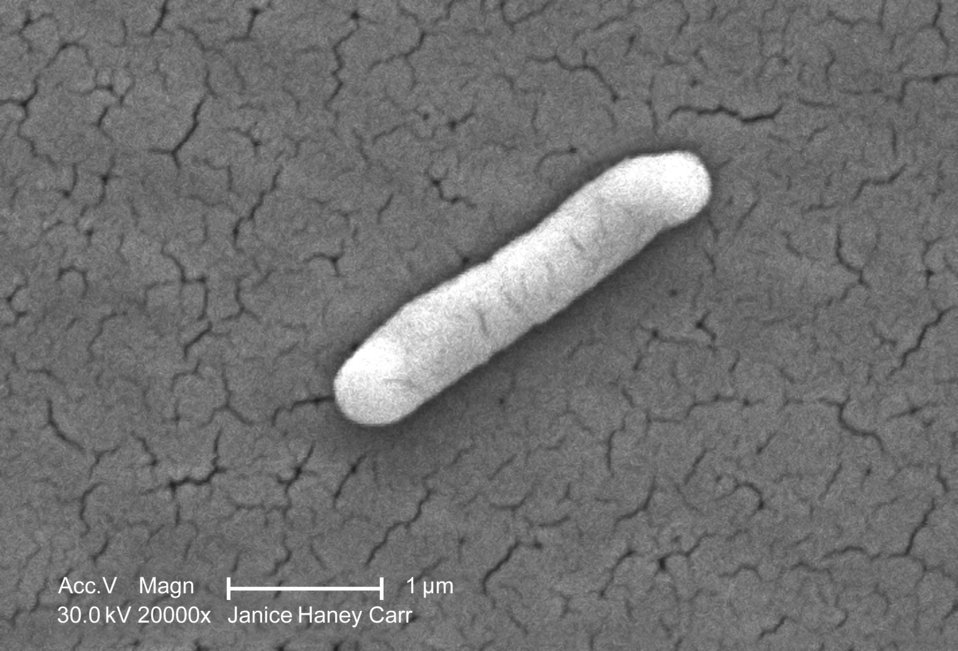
Under a very high magnification of 20000X, this scanning electron micrograph (SEM) revealed the presence of a single Gram-negative Salmonella typhimurium bacterium that had been isolated from a pure culture.